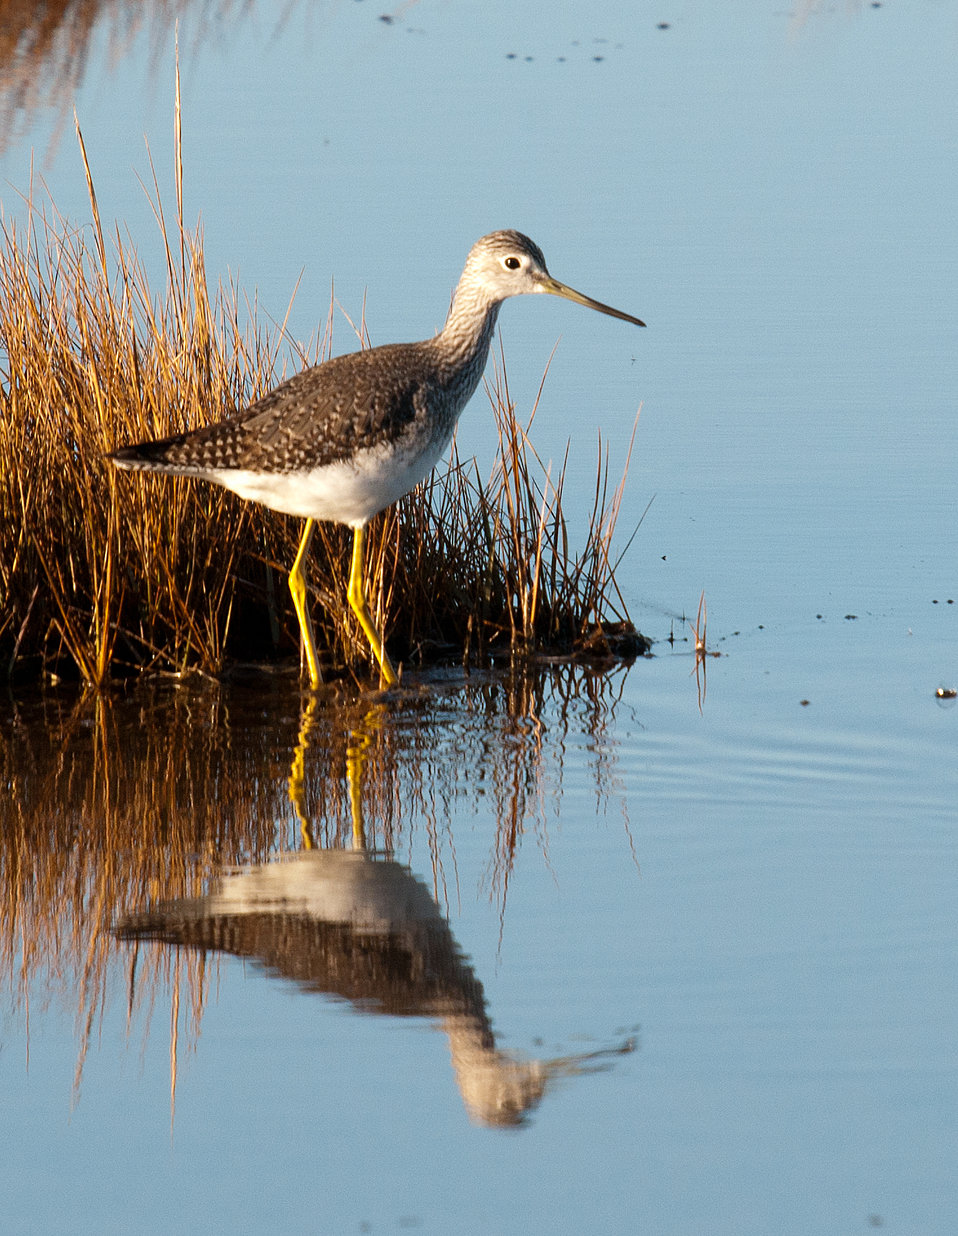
Yellowlegs

Parker River National Wildlife Refuge, MA.